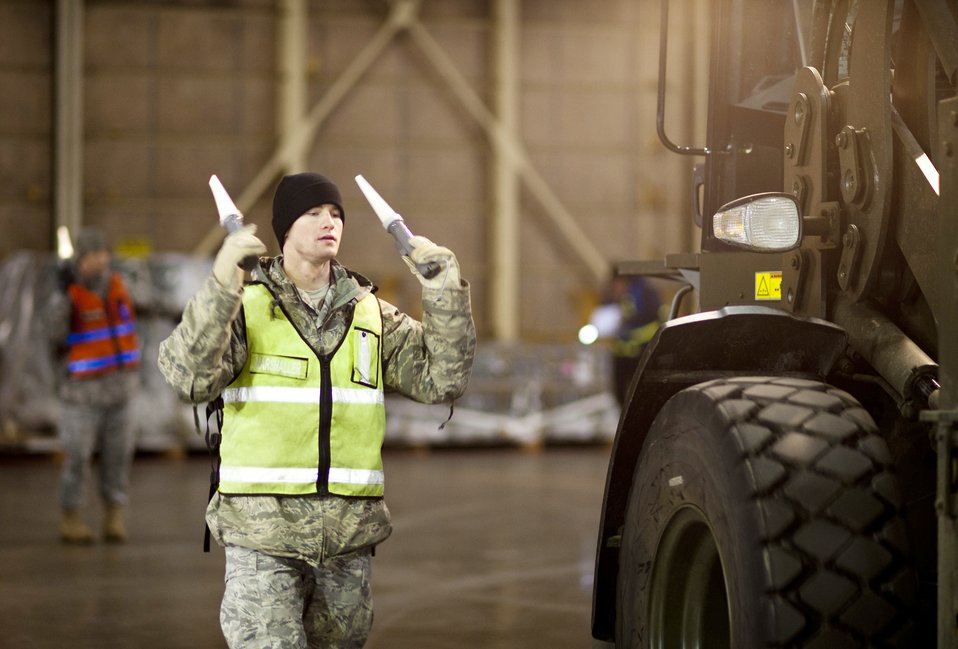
Misawa operations after dark

Airman 1st Class Alex Russell marshalls a 10,000-pound forklift into a hangar at Misawa Air Base, Japan, Jan. 28, 2010, during an operational readiness exercise. Forklift operators used spotters and marshallers to ensure they were able to see what was around them at all times.